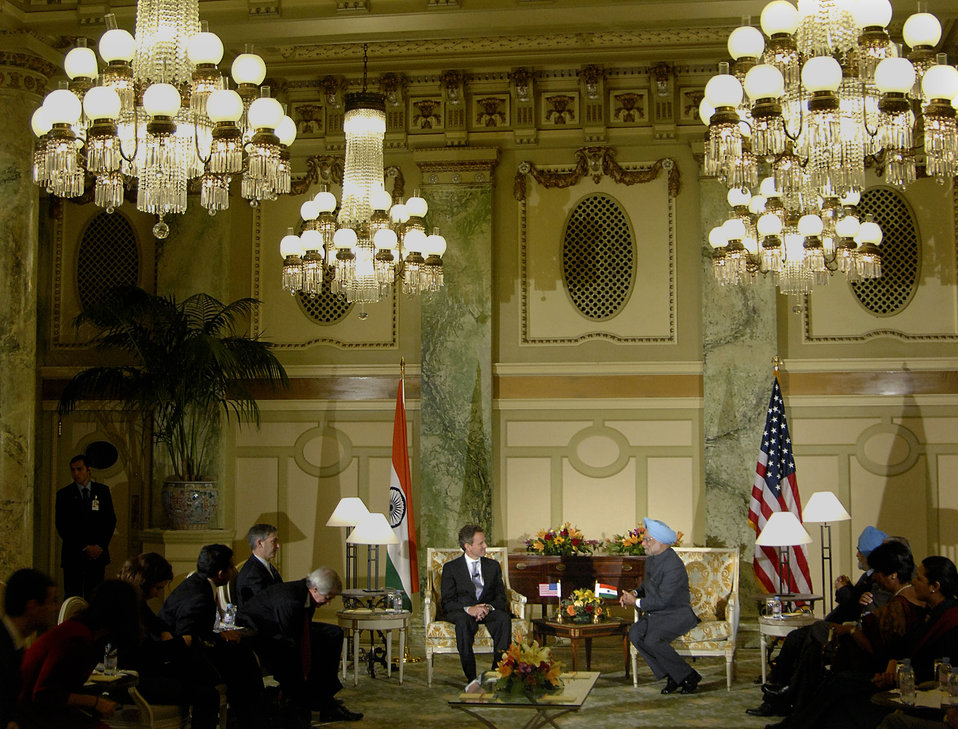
Prime Minister Singh of India

On November 25, 2009, Secretary Geithner participated in a bilateral meeting with Prime Minister Singh of India.